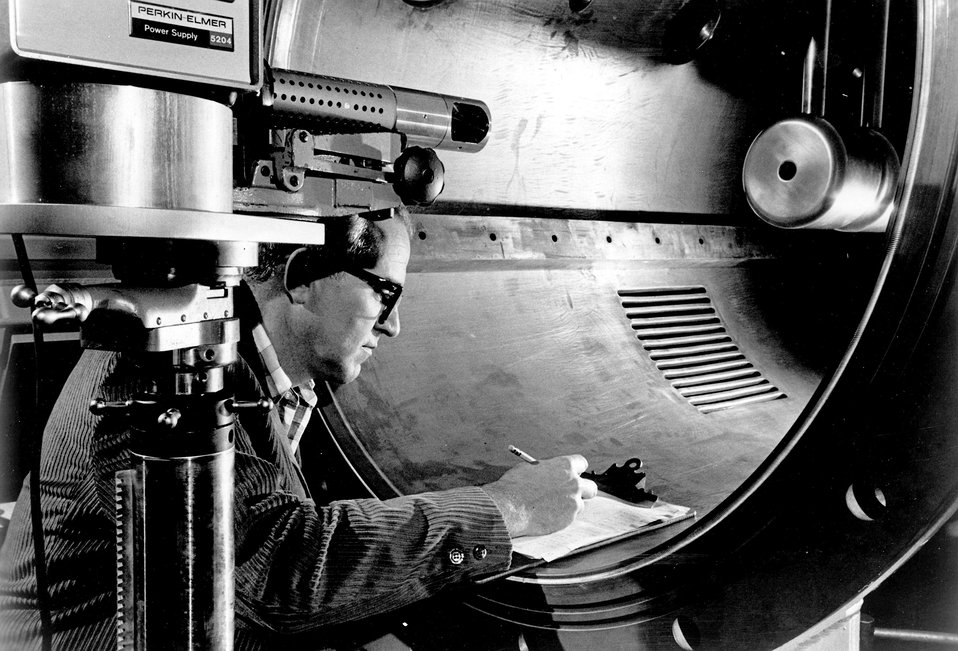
In this photo, a low-power transit laser is used to align
drift tubes of the Alternating Gradient Synchrotron at
Brookhaven National Laboratory.